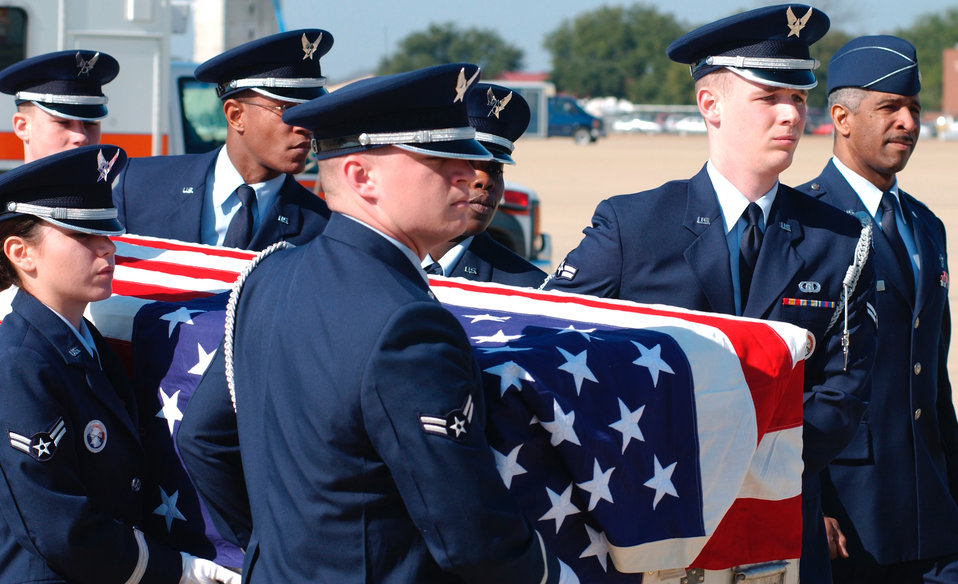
Honoring Columbia's crew

BARKSDALE AIR FORCE BASE, La. -- The base honor guard here carries the remains of a crew member of Space Shuttle Columbia to a NASA C-135 aircraft Feb. 12. The aircraft flew the remains to the Dover Air Force Base, Del., mortuary, where they were identified. Accompanying the honor guard is 2nd Bomb Wing Chaplain (Lt. Col.) Bruce Ewing (right).